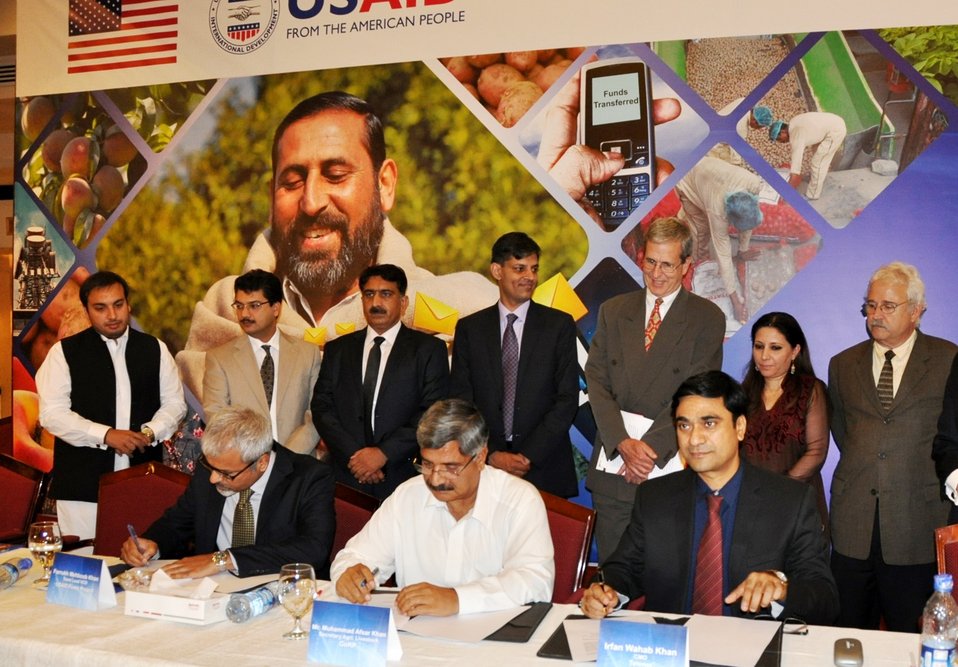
Information and Financial Mobile Solutions- MOU signing ceremony

U.S.-KP-Telenor Partnership Brings New Mobile Technology to Swat Farmers